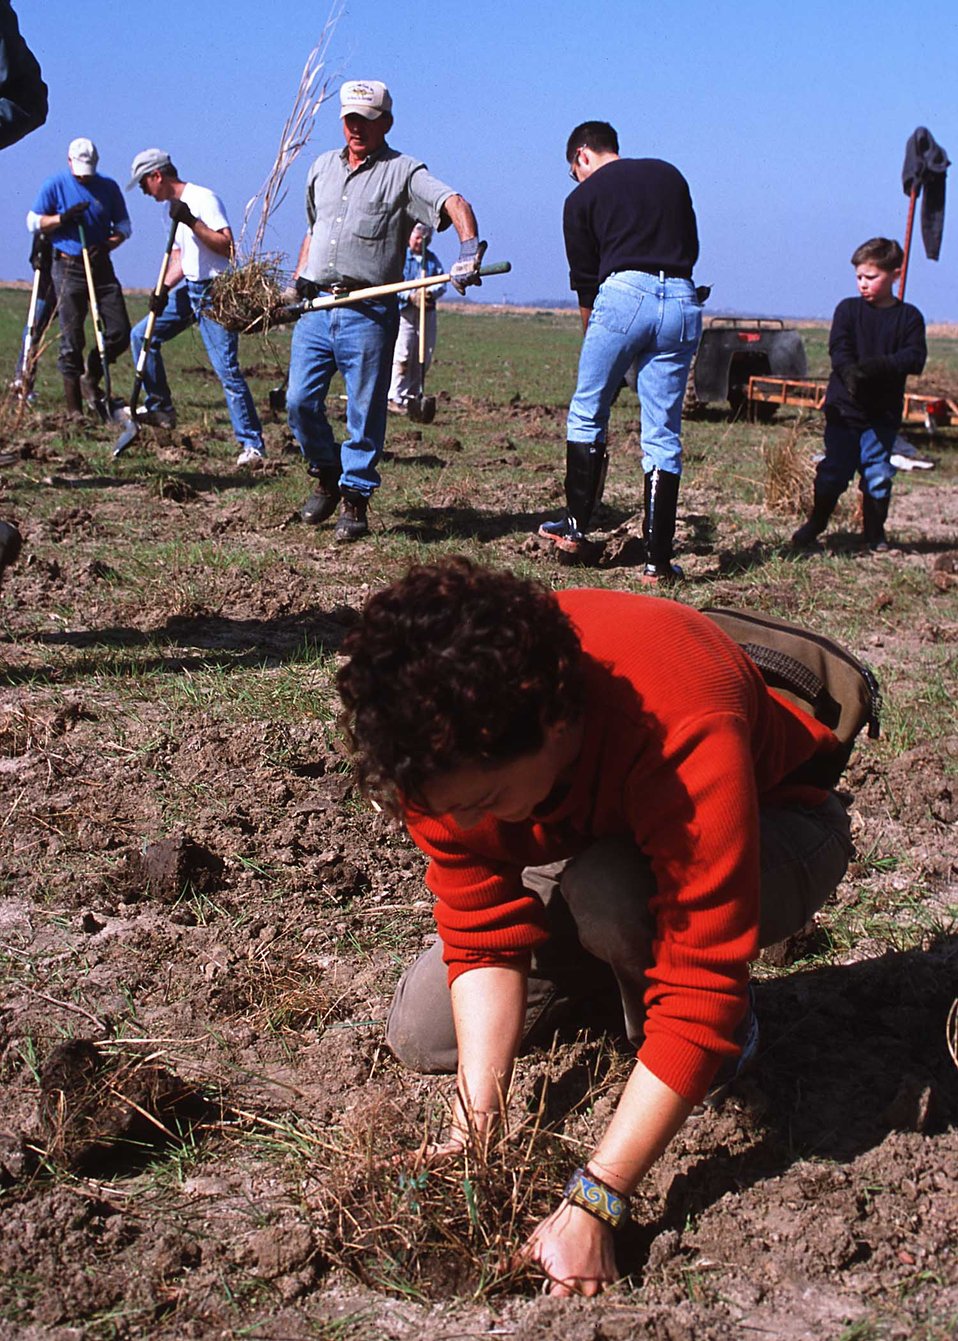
Earth team volunteers of NRCS help transplant native prairie plants from a roadside near Gueydan, Louisiana, to a restored wetland nearby.